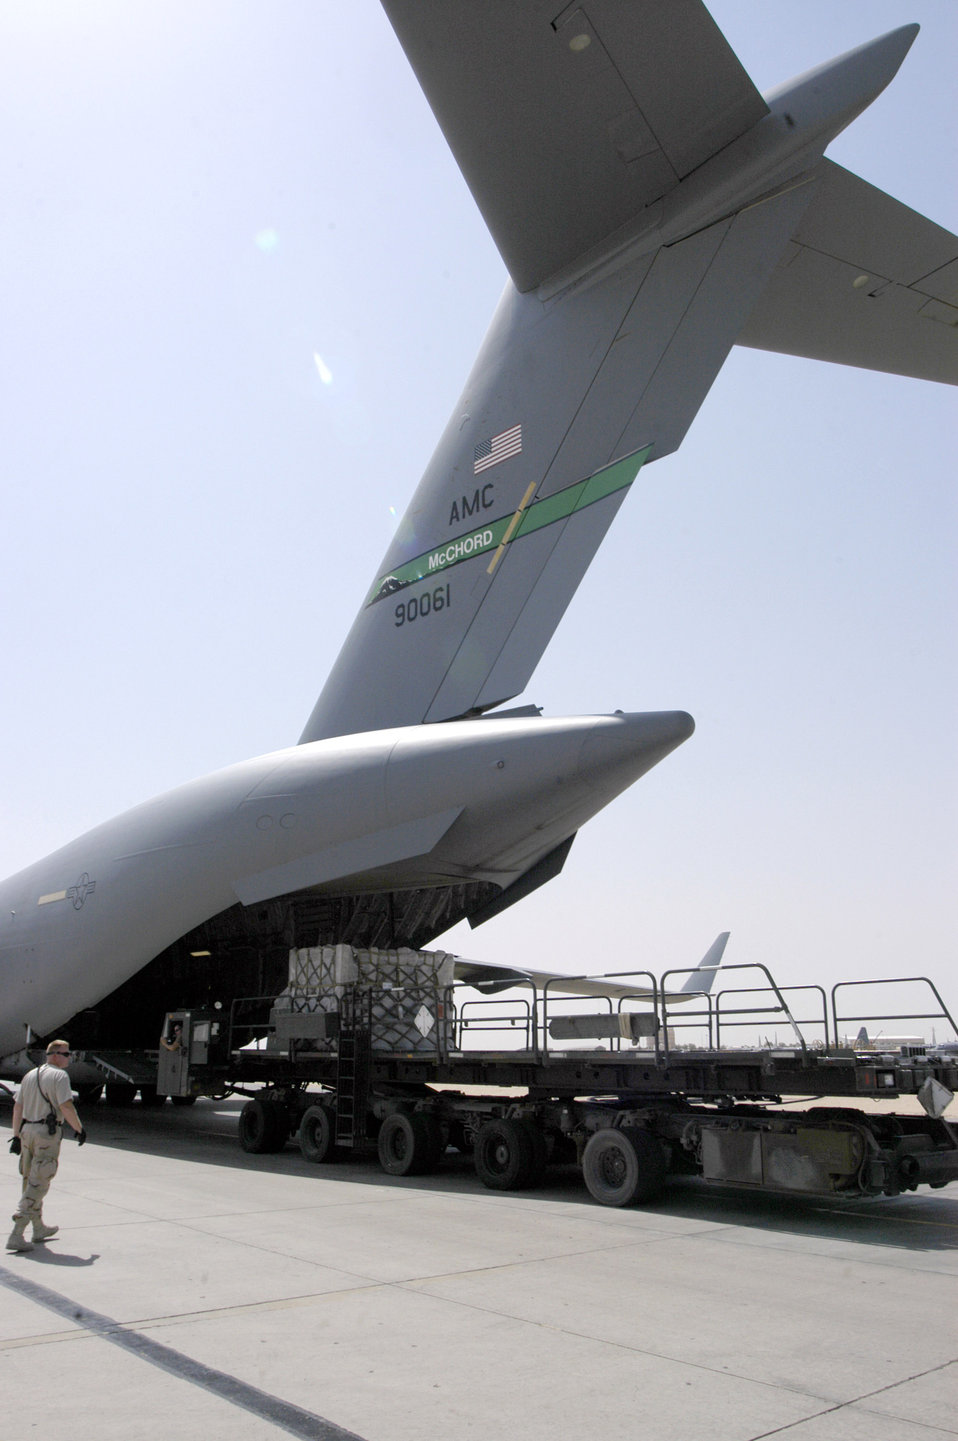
Cargo movement

Tech. Sgt. Mark Harris monitors cargo being loaded on a C-17 Globemaster III on Wednesday, July 19, at a forward operating base in Southwest Asia. The 386th Expeditionary Logistics Readiness Squadron Aerial Port Flight is responsible for receiving, accounting for and moving passengers and cargo in and out of the base. It moved more than 20,000 tons of cargo since the beginning of 2006, almost double what it moved in the first half of 2005. Sergeant Harris is a ramp team shift supervisor with the 386th ELRS.